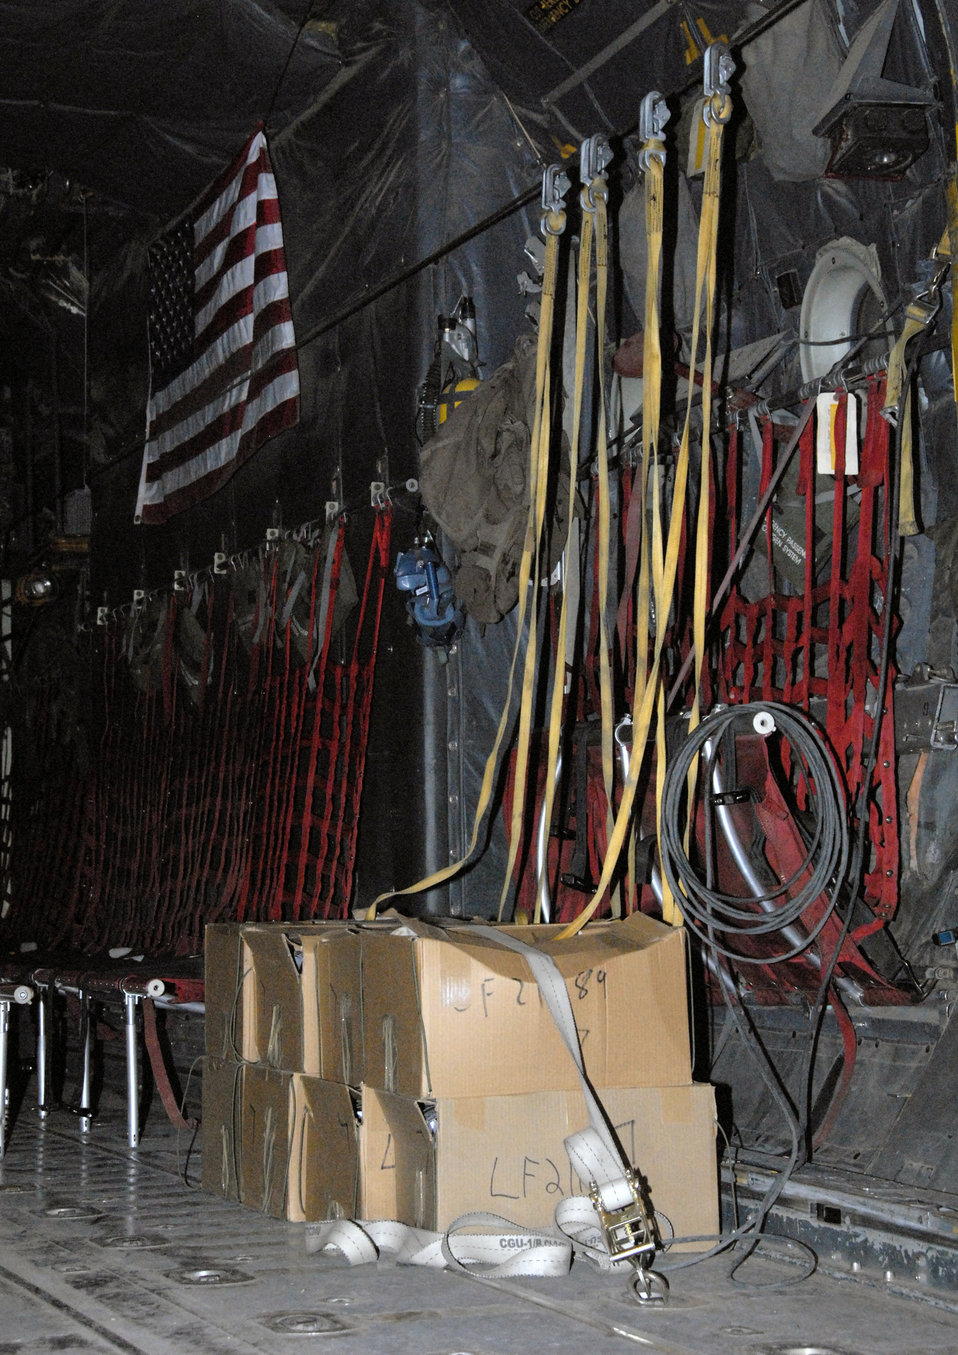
Airmen airdrop messages to Iraqi citizens

Several hundred thousand leaflets to be airdropped over an Iraqi city are strapped down with the static lines running from the leaflet boxes up to the anchor cable of a C-130 Hercules during an airdrop mission recently. The anchor cable is also used by paratroopers when jumping from the aircraft in-flight and the static line is designed to rip open their parachute once they've cleared the aircraft and is pulled back in for reuse.